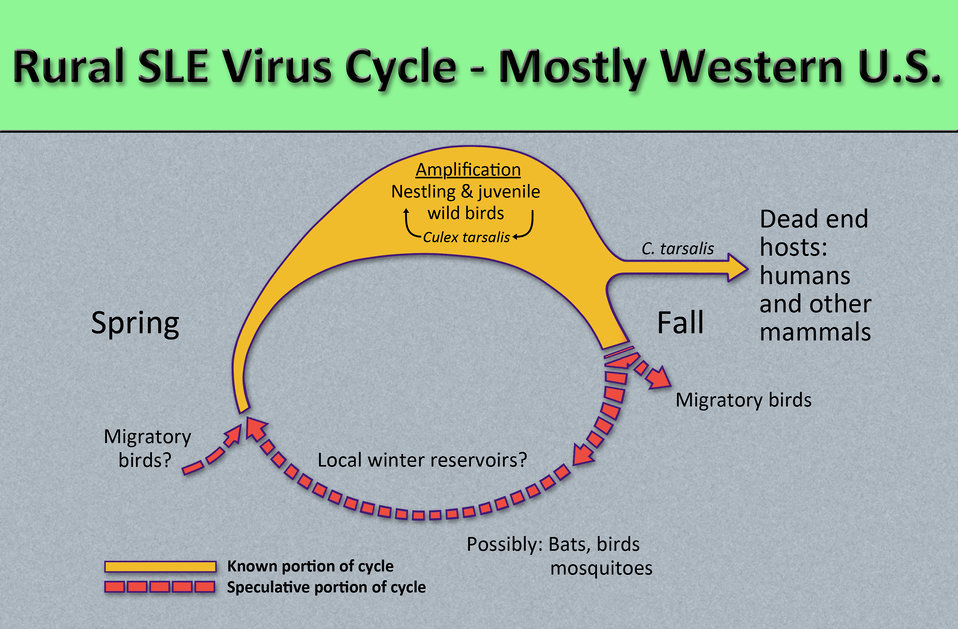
This diagram illustrates the methods by which the rurally distributed arbovirus, St. Louis encephalitis virus (SLEV) reproduces and amplifies itself in the avian populations, and is subsequently transmitted to dead end hosts including humans and other mammals predominantly by the Culex tarsalis mosquito.